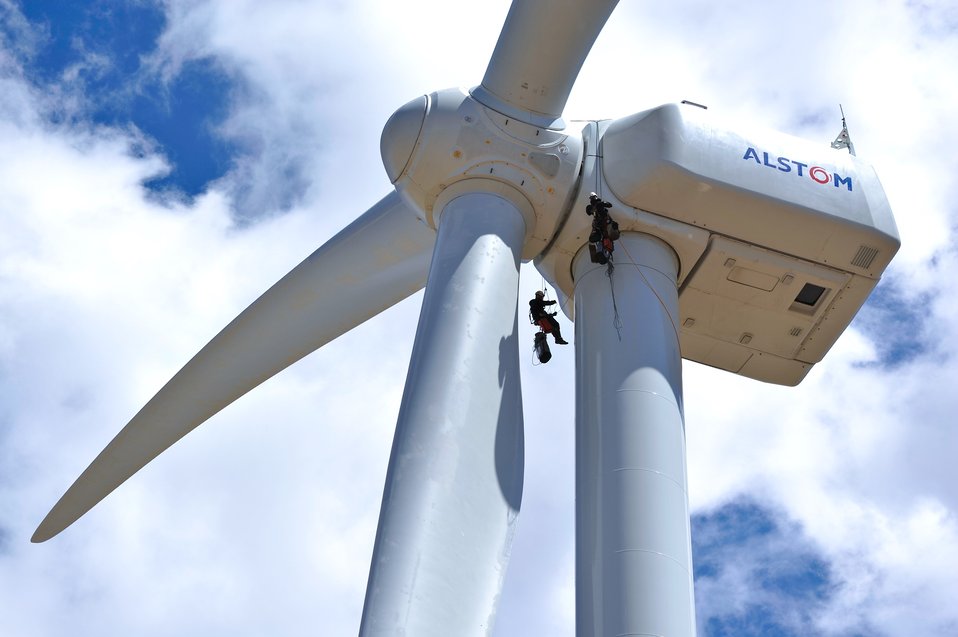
Photo of the Week: July 20, 2012

Jonathan Wiley and Eric Kuntzelman rappel more than 300 feet off the ground from a 3 megawatt wind turbine at the National Wind Technology Center (NWTC) near Boulder, CO. The Energy Department has made significant investments in wind testing facilities like the NWTC. By supporting the testing and validation of newly developed technologies, we are working to reduce costs for manufacturers, speed deployment of next generation technologies, and promote the growth of American companies.